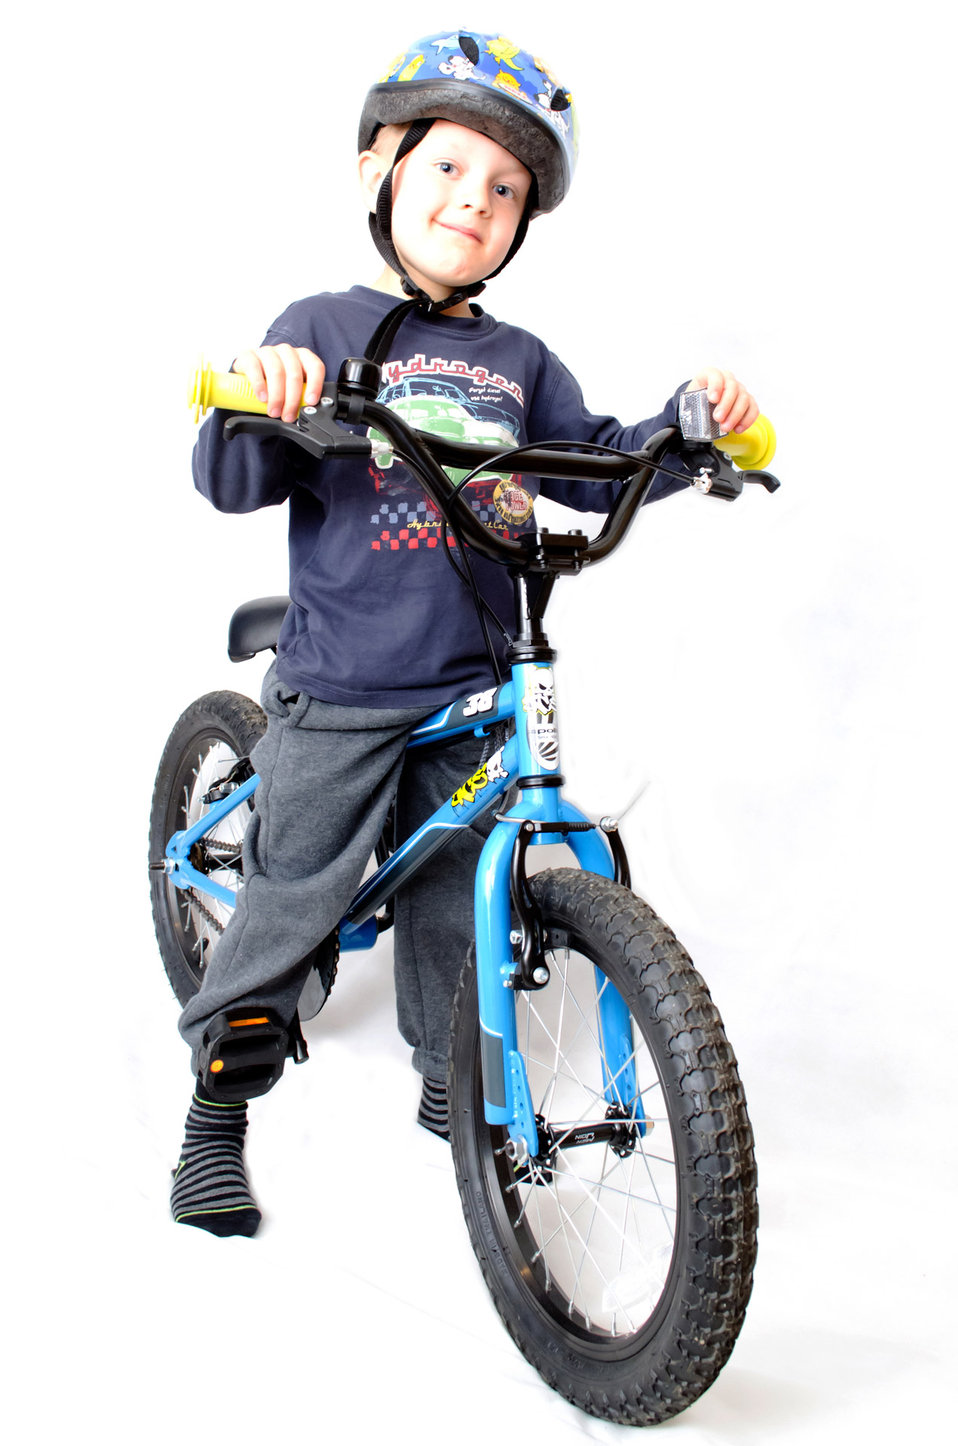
Child and bicycle - sport.